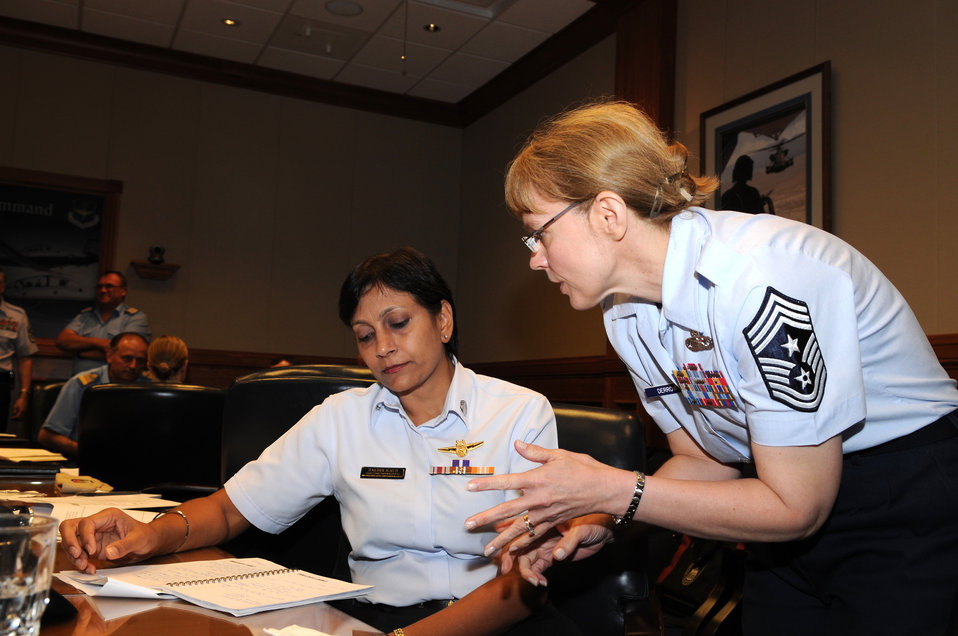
Senior enlisted leaders strengthen international bonds

Chief Master Sgt. Pamela Derrow (right), United States Air Forces in Europe command chief, talks with Singapore air force Warrant Officer Balbir Kaur during the 2009 Worldwide Senior Enlisted Leaders visit May 12-15 at Randolph Air Force Base, Texas. The visit was hosted by U.S. Air Force senior enlisted leaders to give their foreign counterparts a look at a U.S. Air Force enlisted member's career from start to finish.